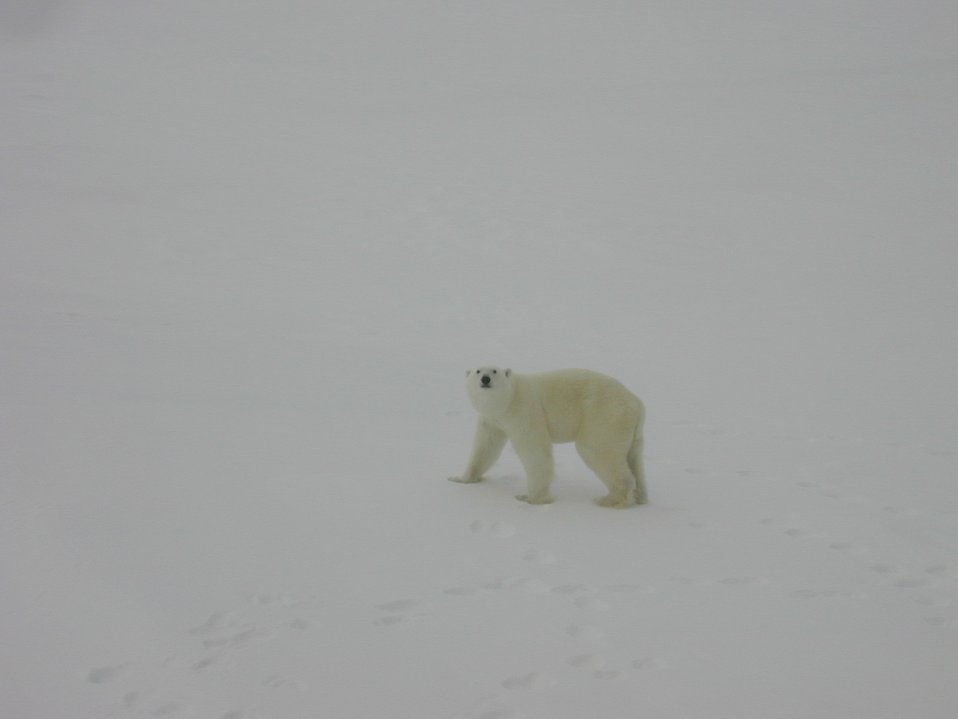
Polar bear (Ursus maritimus) walking on Arctic sea ice.